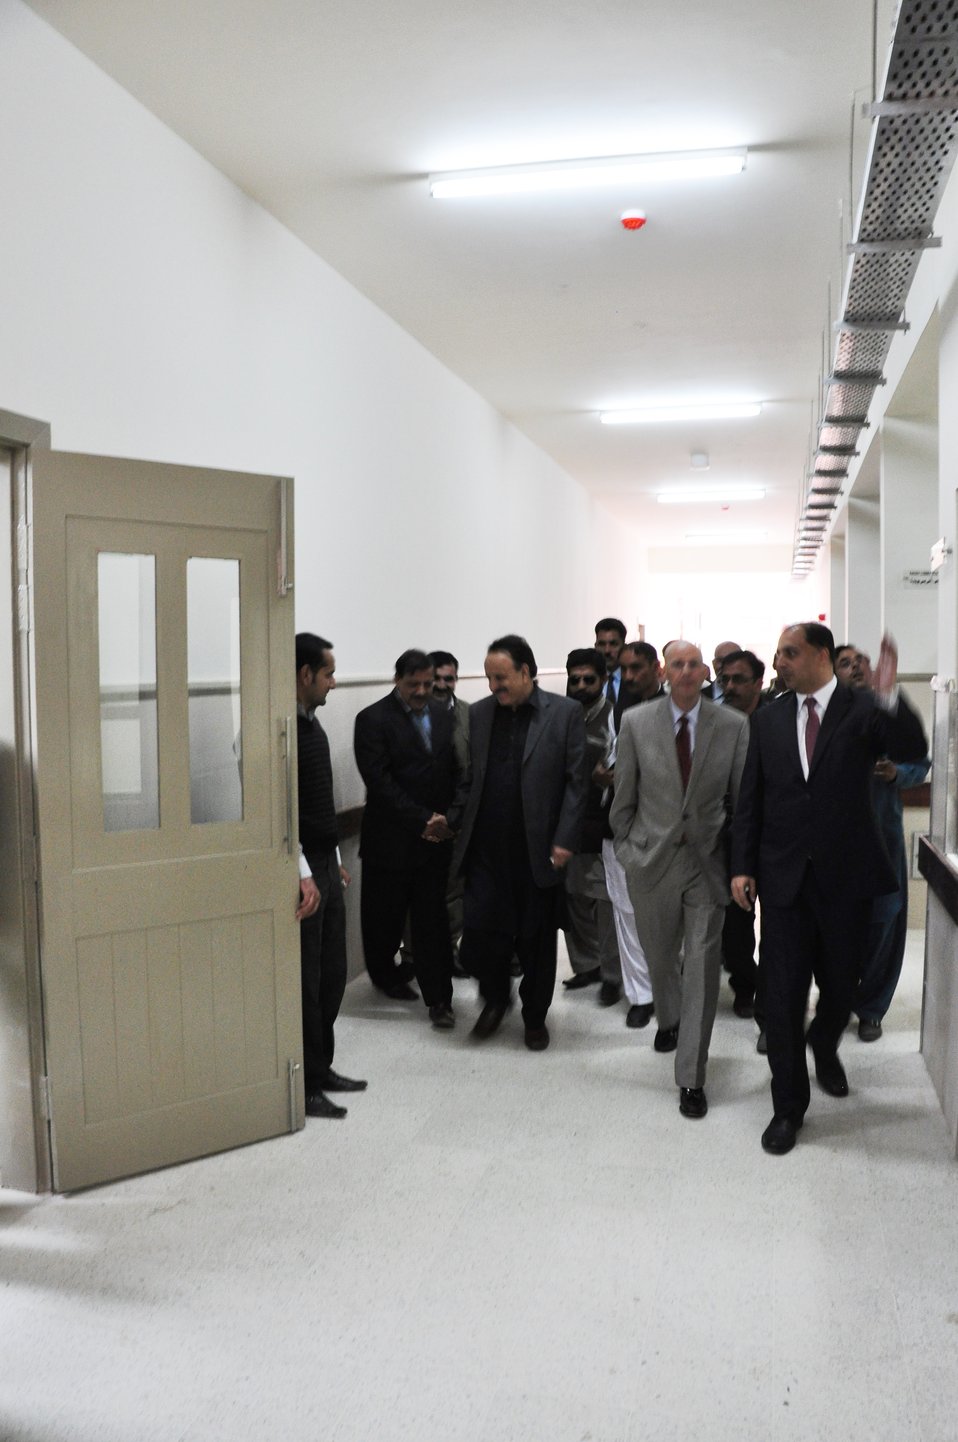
Dhirkot Reconstructed Hospital Inauguration Pakistan Reconstruction Program 03